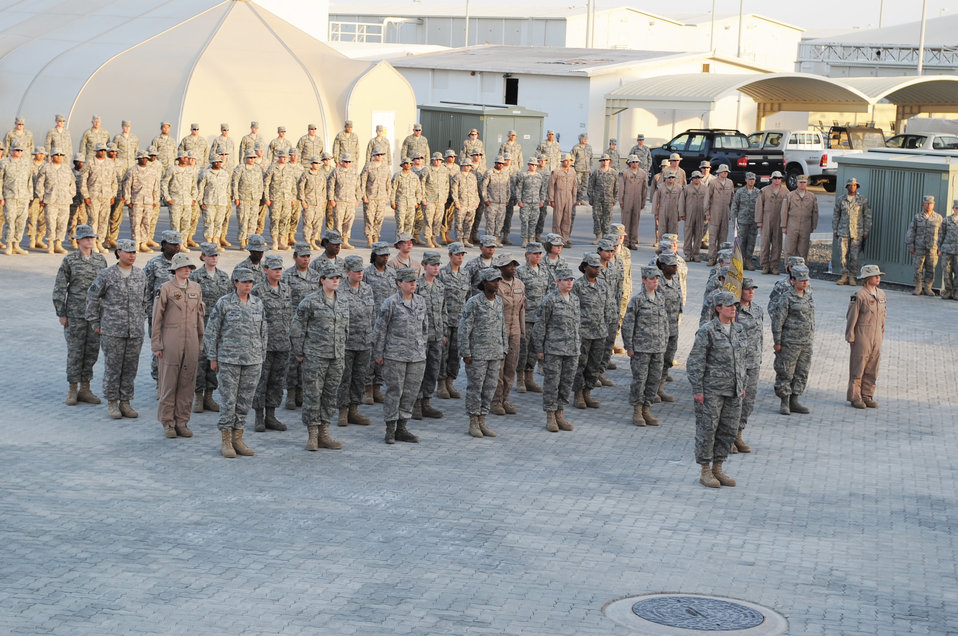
Women's History Month

Female Airmen and Soldiers representing the 380th Air Expeditionary Wing stand in formation March 19, 2010, during a Women's History Month retreat ceremony at an air base in Southwest Asia. The formation honored women who serve in the military, past and present.